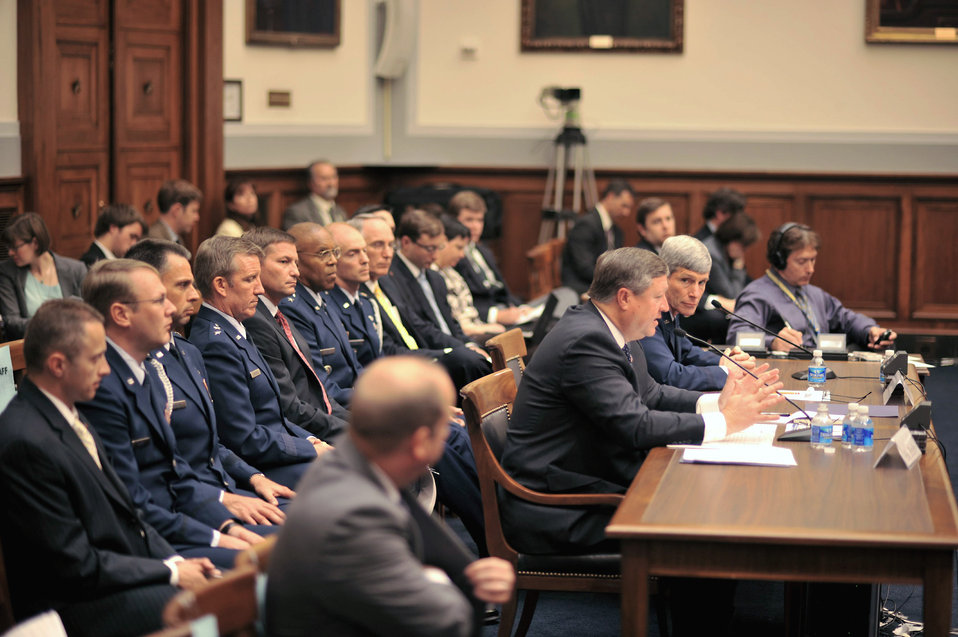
Leaders issue posture statement

Secretary of the Air Force Michael Donley (left at table) testifies with Air Force Chief of Staff Gen. Norton Schwartz before the U.S. House Armed Services Committee on the current Air Force posture May 19 in the House Rayburn Building in Washington, D.C. The two Air Force leaders spent most of the week before both the House and Senate providing feedback with regard to the upcoming budget and current and projected capabilities.